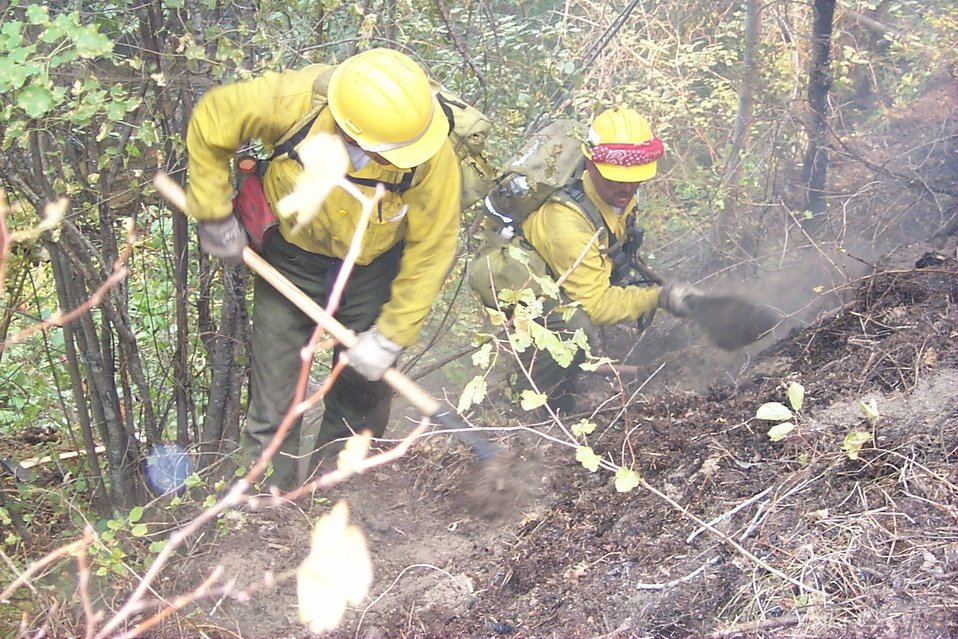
Line crew Fire Clearwater Fire Salmon Field Office USRD Upper Snake River District